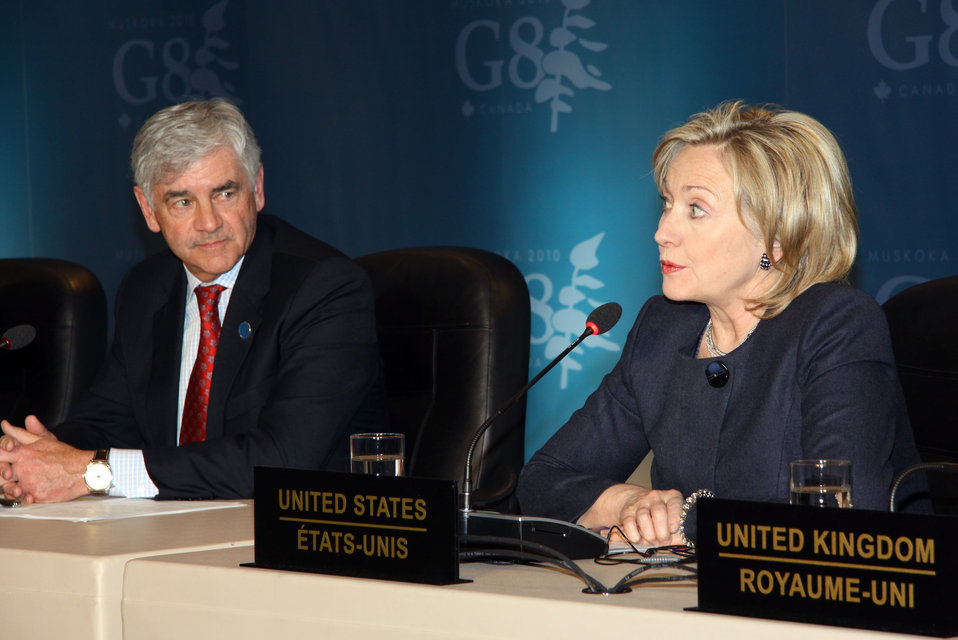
Secretary Clinton Addresses G8 Foreign Ministers Meeting

U.S. Secretary of State Hillary Rodham Clinton and Canadian Minister of Foreign Affairs Lawrence Cannon provide remarks during the G8 Foreign Ministers Meeting in Ottawa, Canada March 29, 2010.